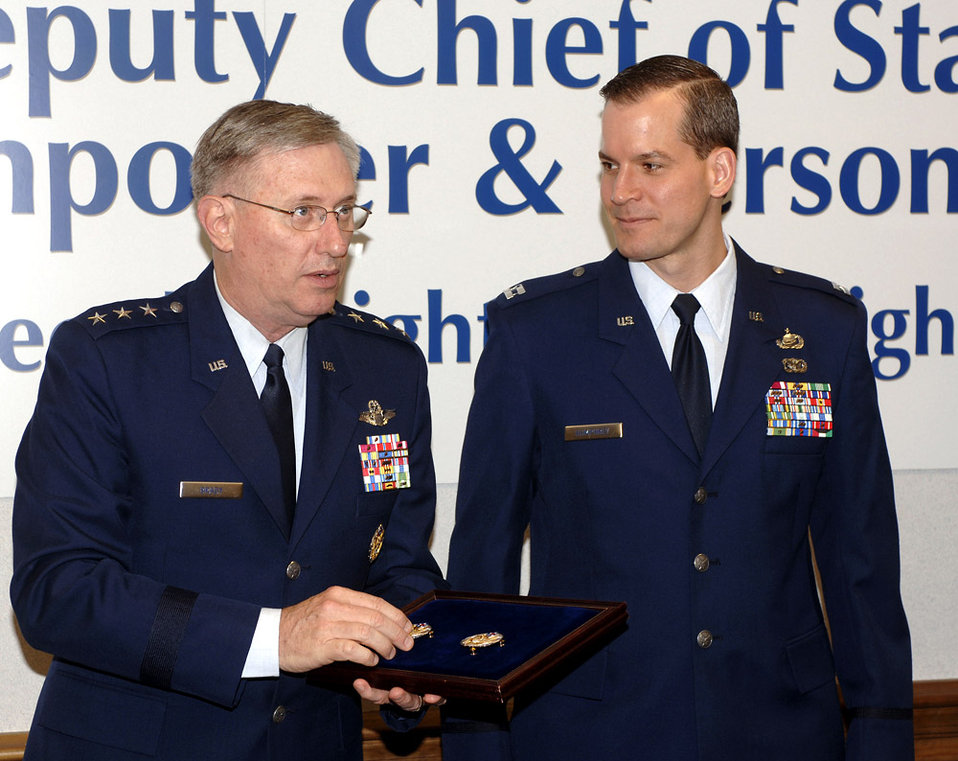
Air Staff badge debuts at Pentagon ceremony

Lt. Gen. Roger Brady, deputy chief of staff for manpower and personnel, prepares to present the new Headquarters Air Force badge to Capt. Brian Humphrey during a ceremony marking the official release of the badge on Friday, May 19, 2006, in the Pentagon. Airmen assigned to the Pentagon will have the option to wear the new badge. The basis for the badge is Air Force heritage and the design incorporates many elements from the Department of the Air Force Seal. Air Force Chief of Staff Gen. T. Michael Moseley approved the design and development of the badge in September.